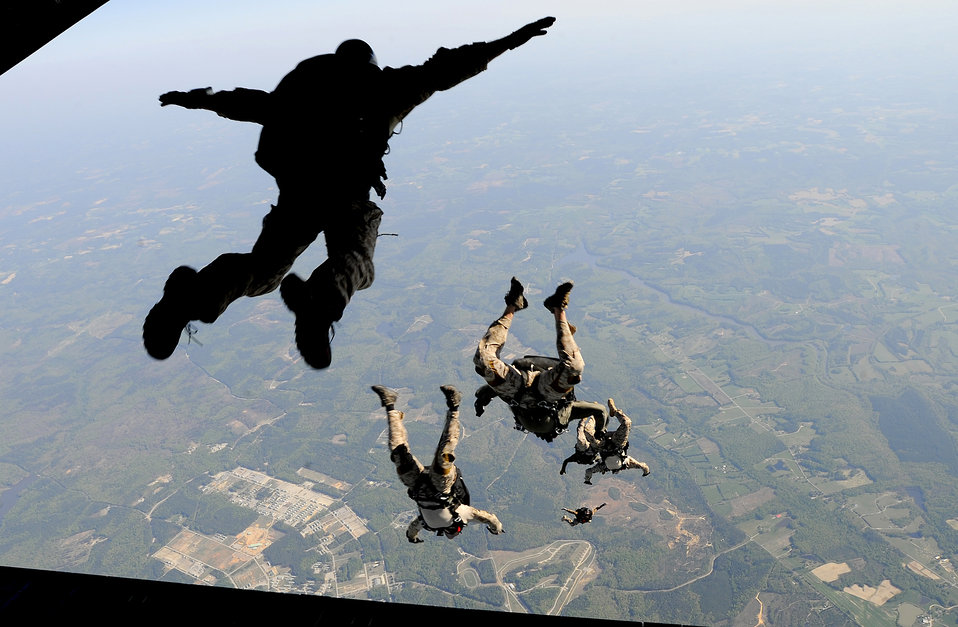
Joint training at 12,500 feet

Navy SEALs jump from the ramp of a C-17 Globemaster III April 15, 2010, over Fort Pickett Maneuver Training Center, Va. The jump was part of joint training exercise with 517th Airlift Squadron members from Elmendorf Air Force Base, Alaska.